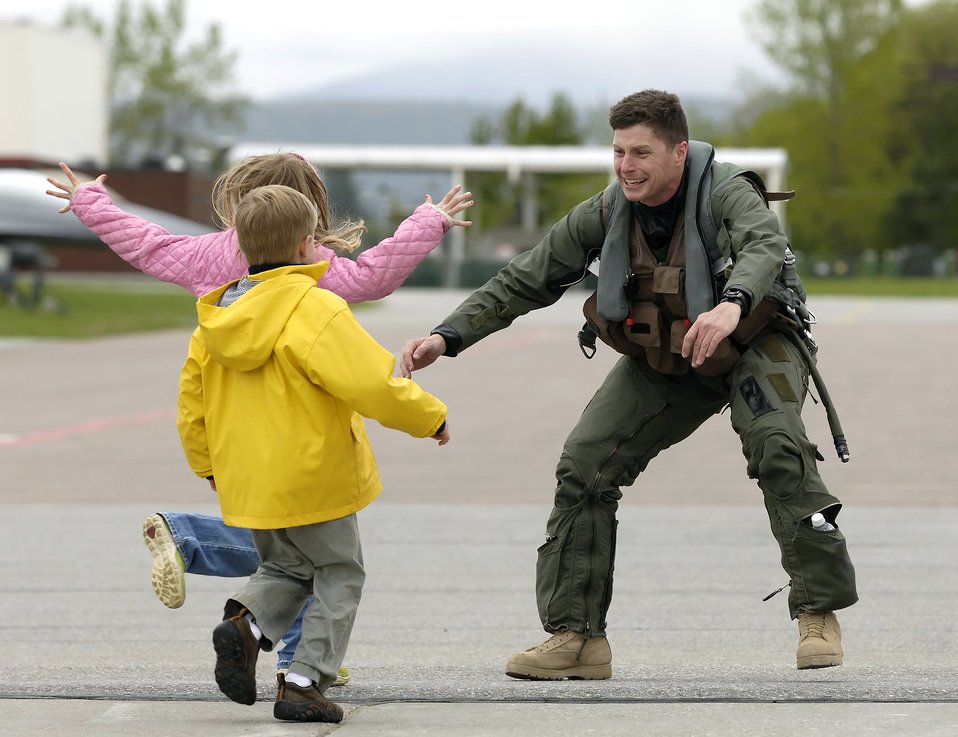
'Green Mountain Boys' come home

Lt. Col. Hank Harder reaches out to hug his 8-year-old daughter, Haley, and 6-year-old son, Henry, upon returning from Iraq on Monday, May 22, 2006. Colonel Harder is an F-16 Fighting Falcon pilot with the Vermont Air National Guard's 134th Fighter Squadron. He and other